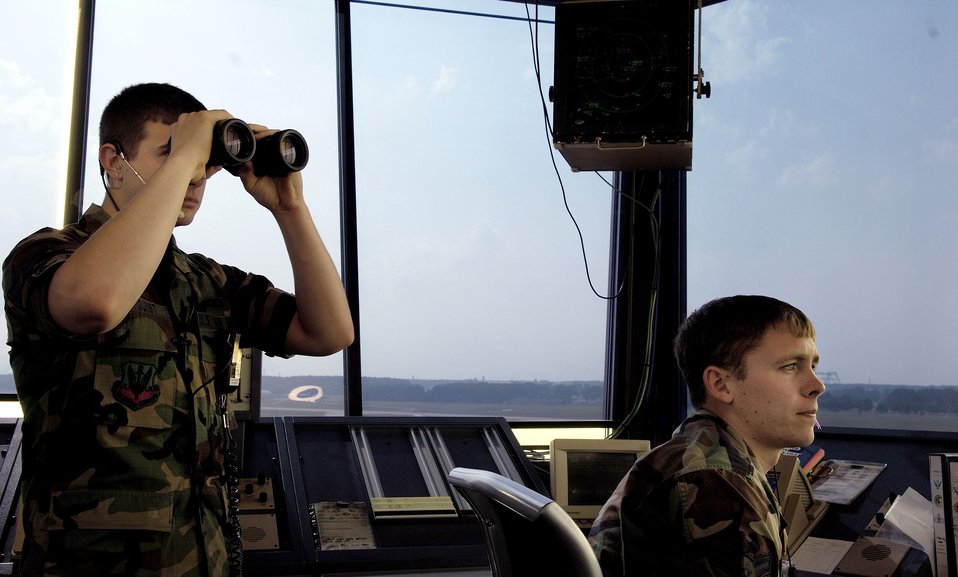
Langley aircraft return home

Airmen 1st Class Jeremiah Ornquist (left) and Joshua Snelling assist F-22 Raptors and F-15 Eagles land on the newly reconstructed runway at Langley Air Force Base, Va., on July 28. The 27th, 71st and 94th Fighter Squadrons have been flying sorties and participating in exercises around the country while upgrade repairs were being done to their home runway. The Airmen are air traffic controllers with the 1st Operations Support Squadron.